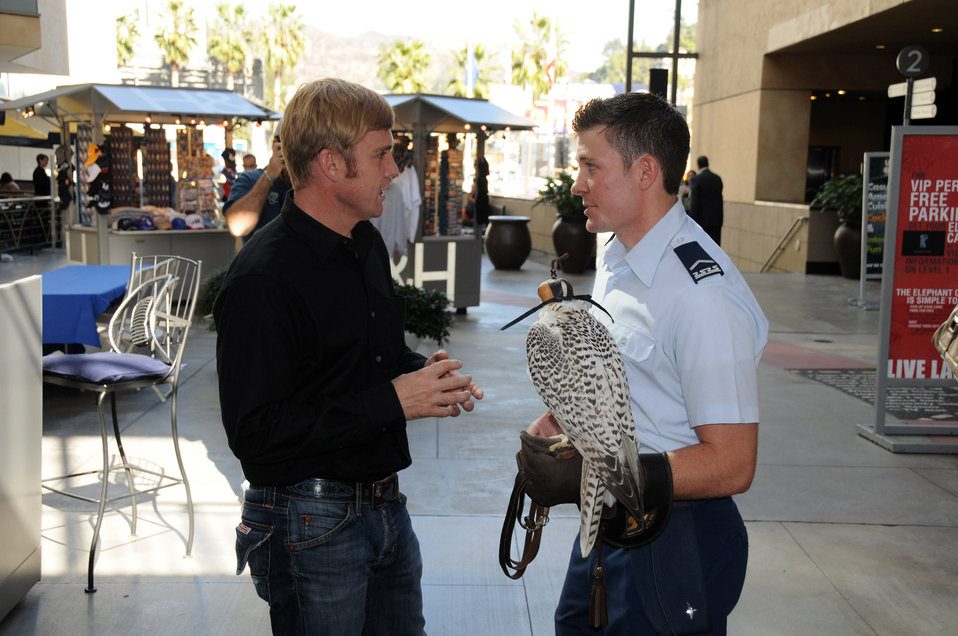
Ceremony salutes LA's long association with Air Force

Air Force Academy Cadet 3rd Class Jeremiah Baxter, holding falcon named Banshee, chats with actor Rick Schroder Nov. 14, following a ceremony in Hollywood, Calif., that kicked off Air Force Week Los Angeles.